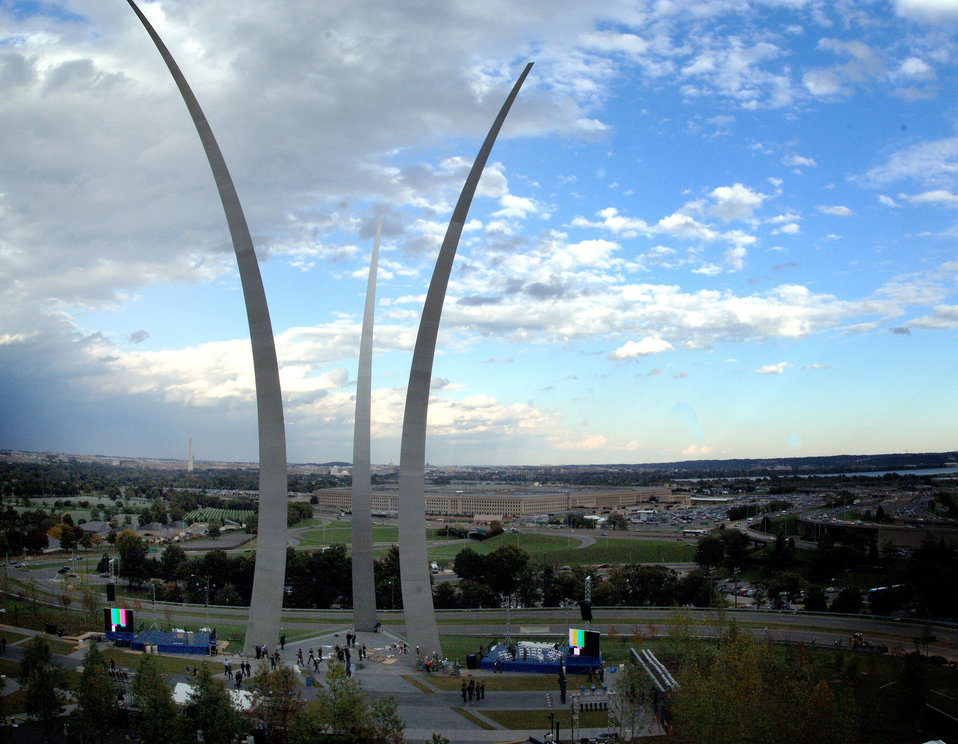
Memorial dedication to launch AF's 60th Anniversary observance

Organizers make final preperations for the dedication ceremony of the Air Force Memorial, in Arlington, Va., on Oct. 12. The memorial's dedication ceremony kicks off at 9 a.m. Oct. 14.